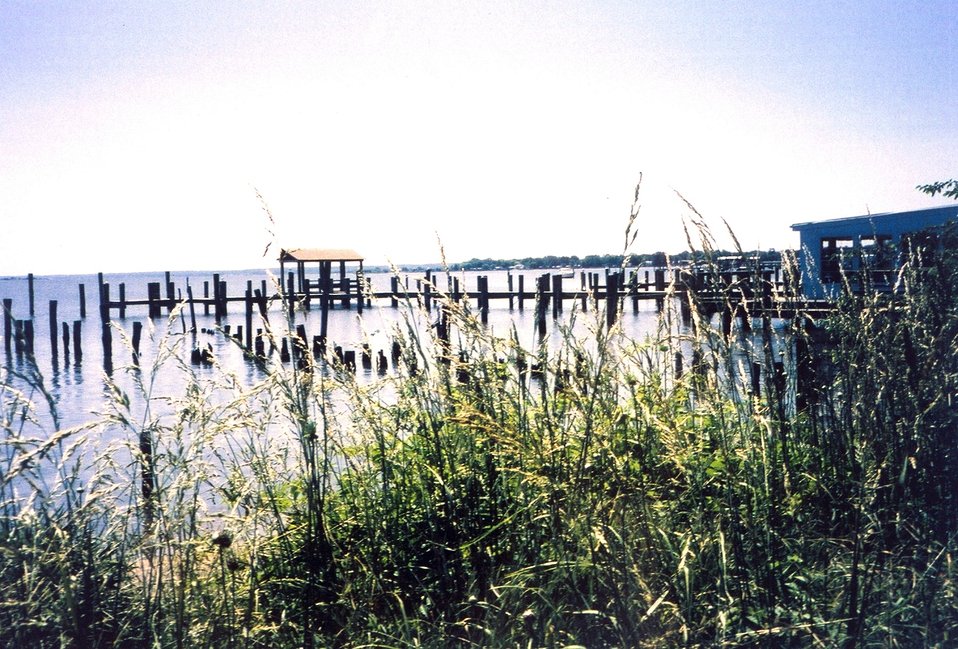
Piers, looking down river from Benedict.